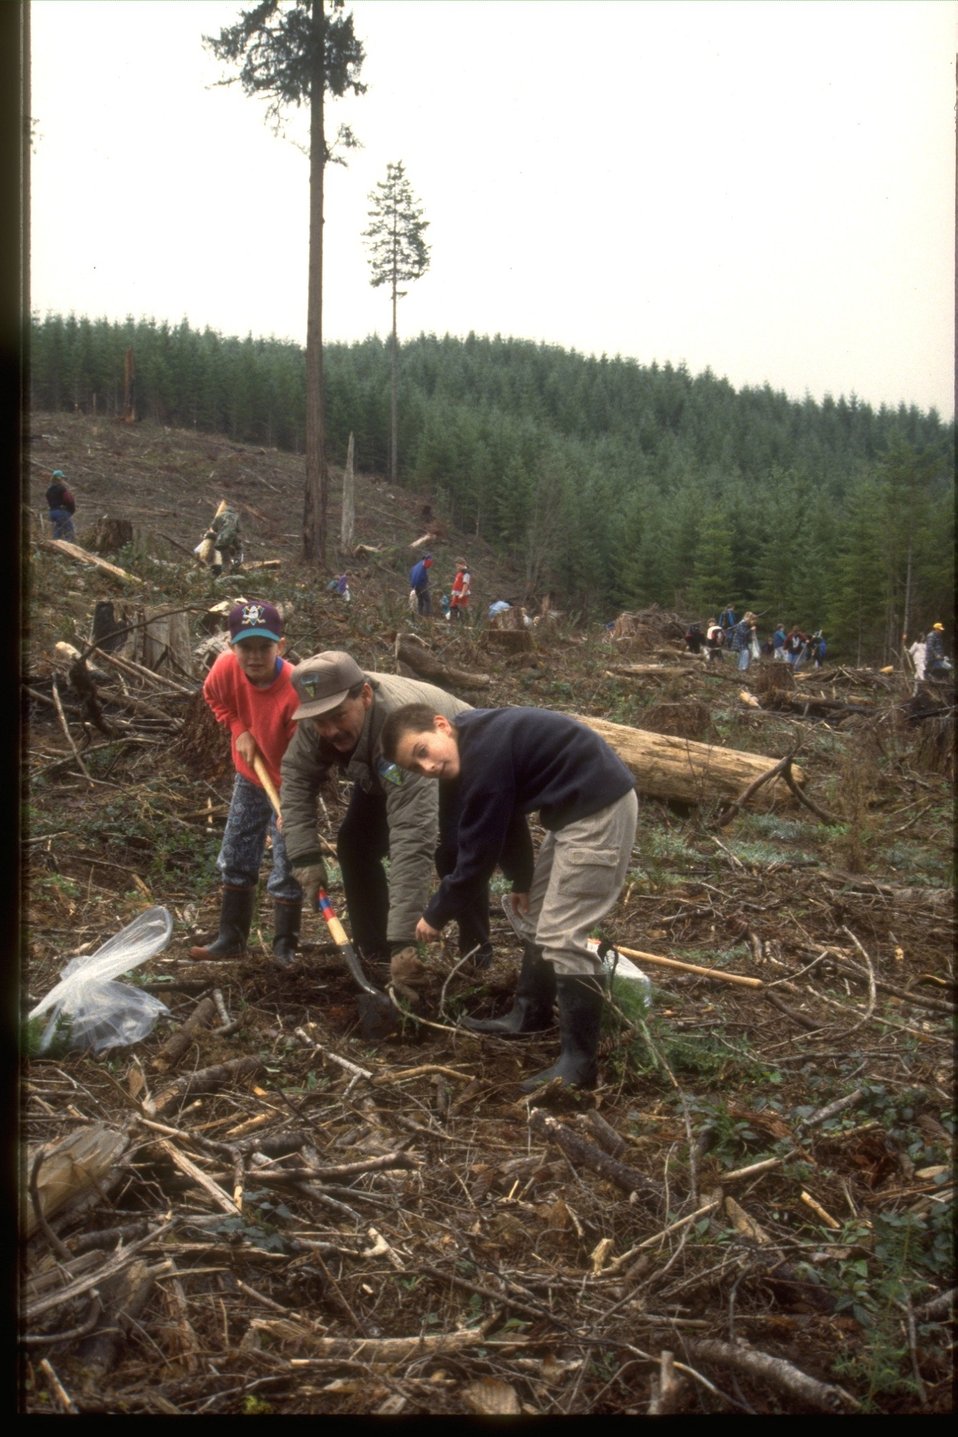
Kids planting trees.